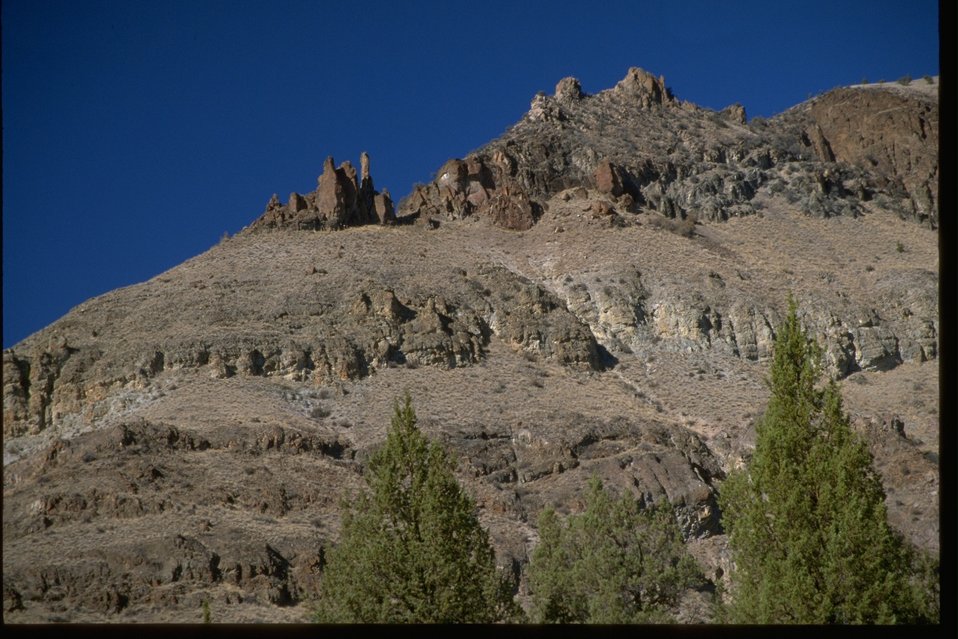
Rock formations and juniper above the John Day River.